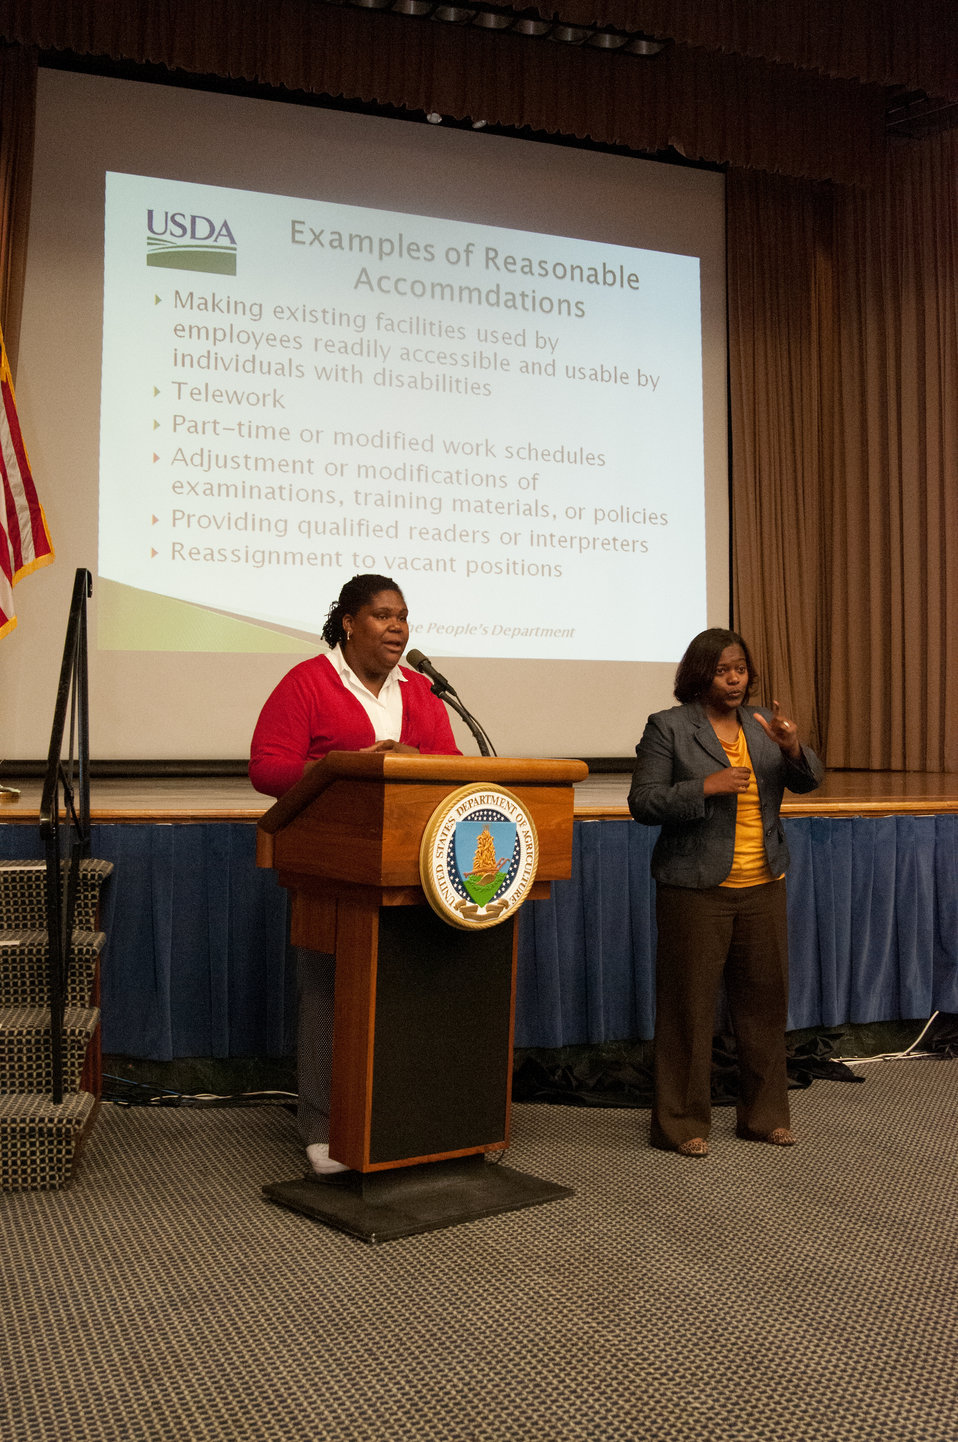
U.S. Department of Agriculture (USDA) Office of Human Resources Management (OHRM) Diversity and Inclusion Specialist Natalie Veeney Ford discusses reasonable accommodations for employees with disabilities at USDA’s OHRM Disability Employment Program Team Training at USDA in Washington, D.C. on Tuesday, May 14, 2013. Rebecca Phillips interprets for hearing-impaired employees during the event.